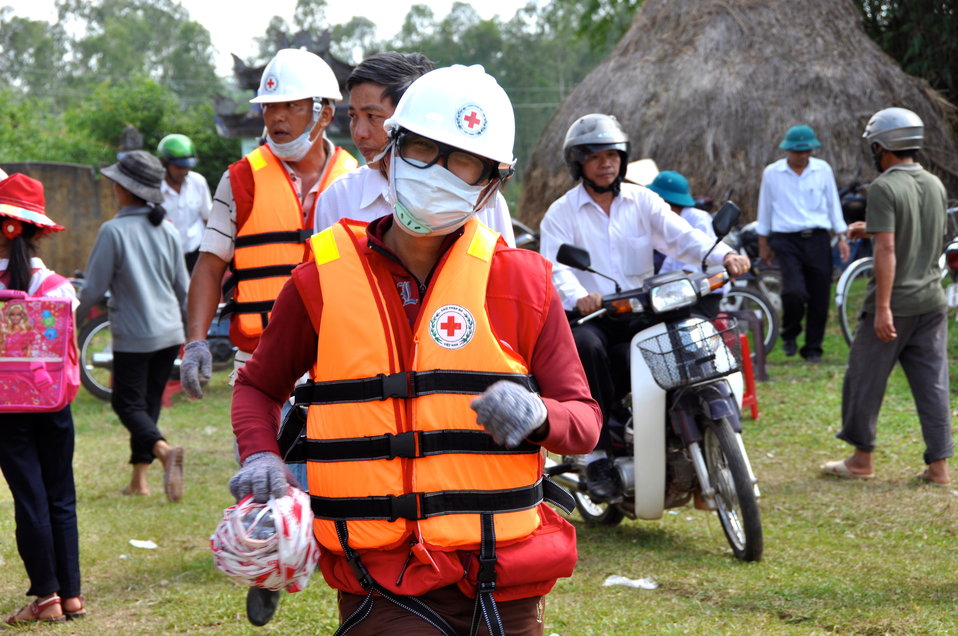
USAID, Red Cross Support Disaster Response Drill in Duy Hoa Commune, Quang Nam Province

Duy Hoa Commune, Quang Nam Province
December 5, 2012